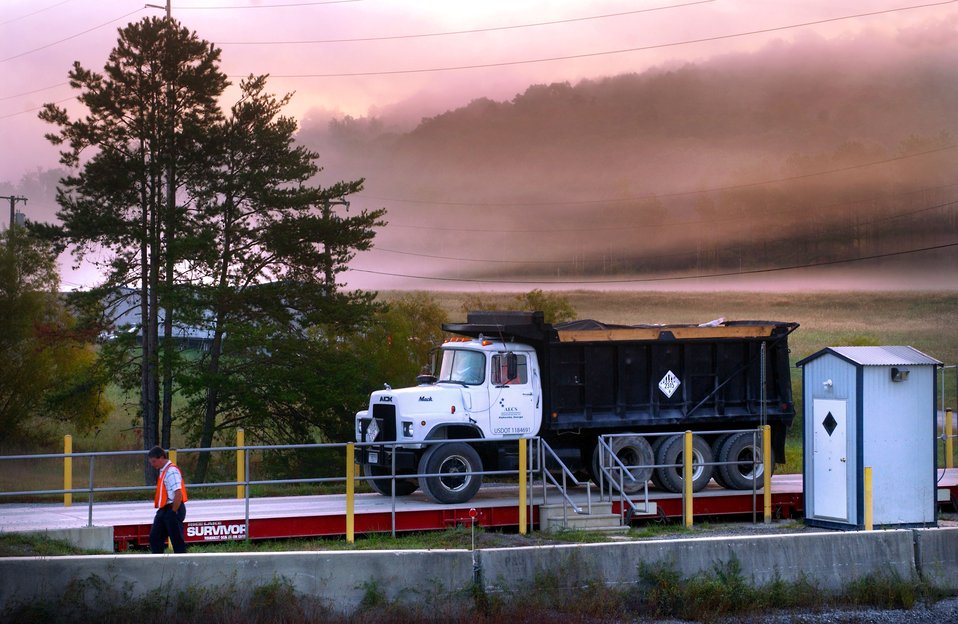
Out of the Box Solution

Before waste from Recovery Act projects can be sent to Oak Ridge’s disposal site, the Environmental Management Waste Management Facility (EMWMF), it must meet certain waste acceptance criteria, which requires it to be sampled and analyzed.
Joe Birchfield, the on-site DOE representative for Recovery Act projects, and his team, have devised solutions to handle the large influx of waste.
One of those solutions, a biased-sampling approach, saved time and accelerated the project schedule for Buildings 9769 and 9211.